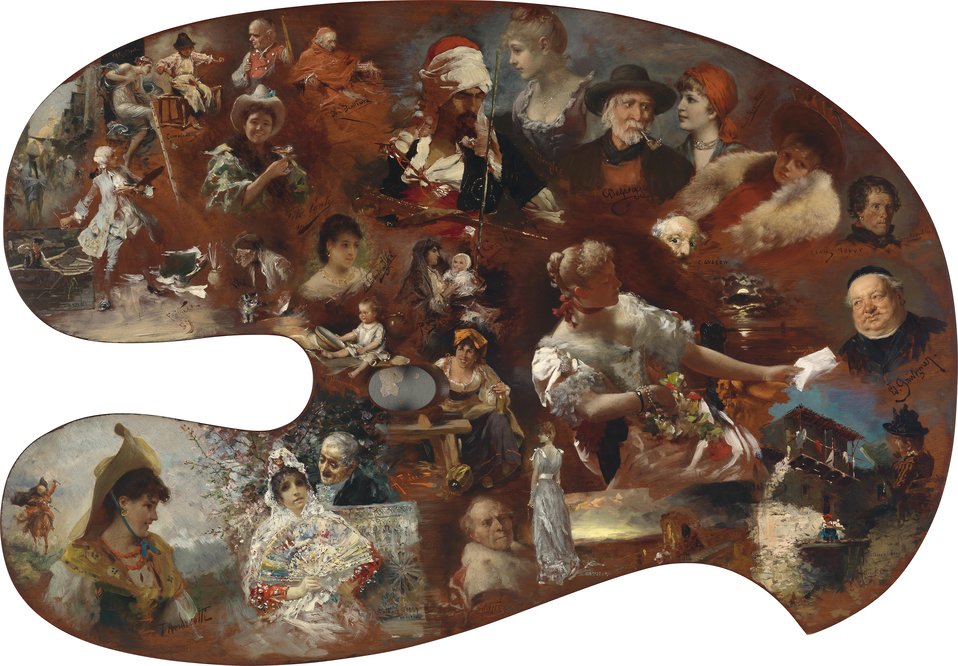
Deutsch: Malerpalette, beidseitig mit siebzig signierten und teilweise datierten Darstellungen deutscher, österreichischer, italienischer, spanischer norwegischer, schwedischer und polnischer Künstler bemalt, Öl auf Holz, ca. 68,5 x 47 cm; unter anderem sind folgende Künstler vertreten: Andreas und Oswald Achenbach, Eugen von Blaas, Joseph von Brandt, Ladislaus Czachorski, Franz von Defregger, Eduard von Grützner, Cecil von Haanen, Hugo Kauffmann, Isidor Kaufmann, Friedrich August von Kaulbach, Alfred Wierusz Kowalski, Gabriel von Max, Francisco Pradilla y Ortiz, Henryk Siemiradzky